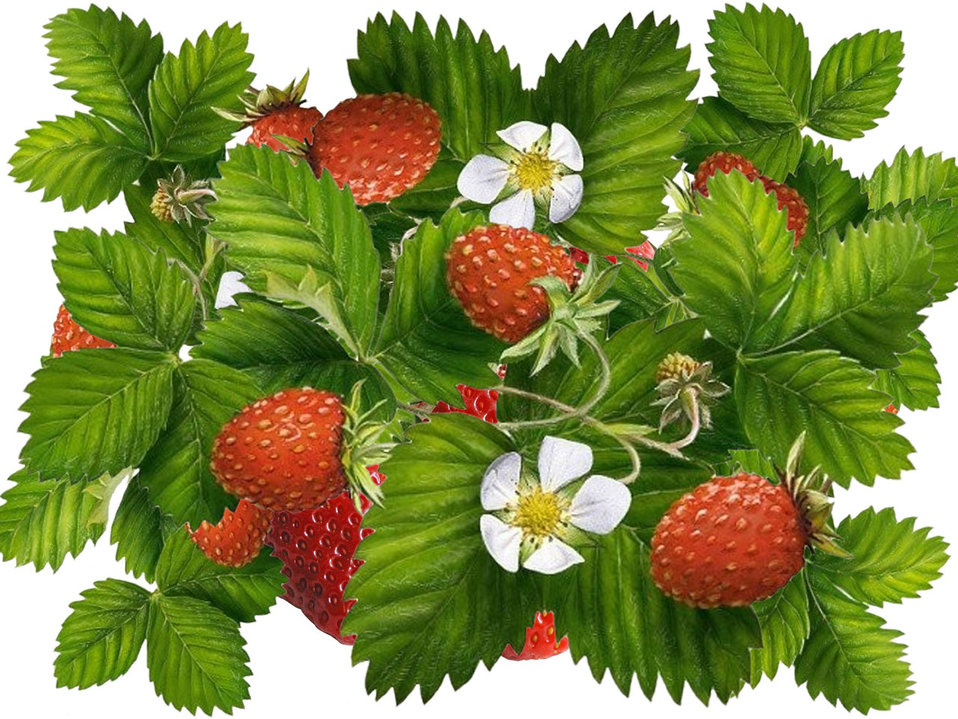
Strawberries, leaves and flowers.